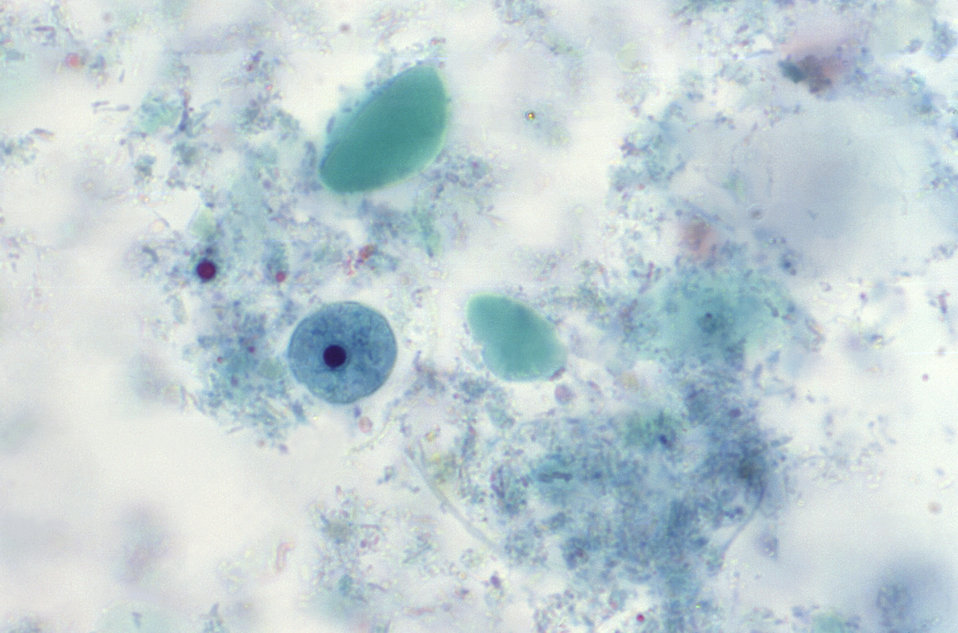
This trichrome-stained photomicrograph revealed the presence of a parasitic Iodamoeba b�ii trophozoite, however, in this case, there were no achromatic granules visible, which were visible in the trophozoite pictured in PHIL 14786.